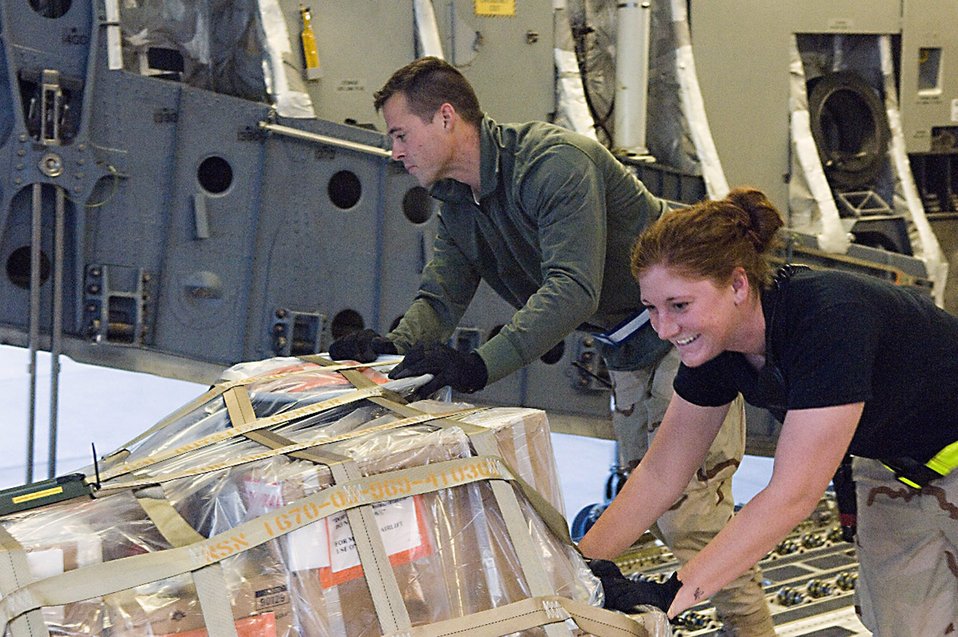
Balad aerial port bests cargo movement record

Airman 1st Class Paula Putrino and Staff Sgt. Michael Groen push a pallett onto an aircraft cargo loader Dec. 8 at Balad Air Base, Iraq. Both Airmen were part of the team who broke the single-day record for cargo movement, moving 930 tons of equipment and supplies in a day. Airman Putrino and Sergeant Groen are 332nd Expeditionary Logistics Readiness Squadron aerial porters, and are deployed from Pope Air Force Base, N.C.